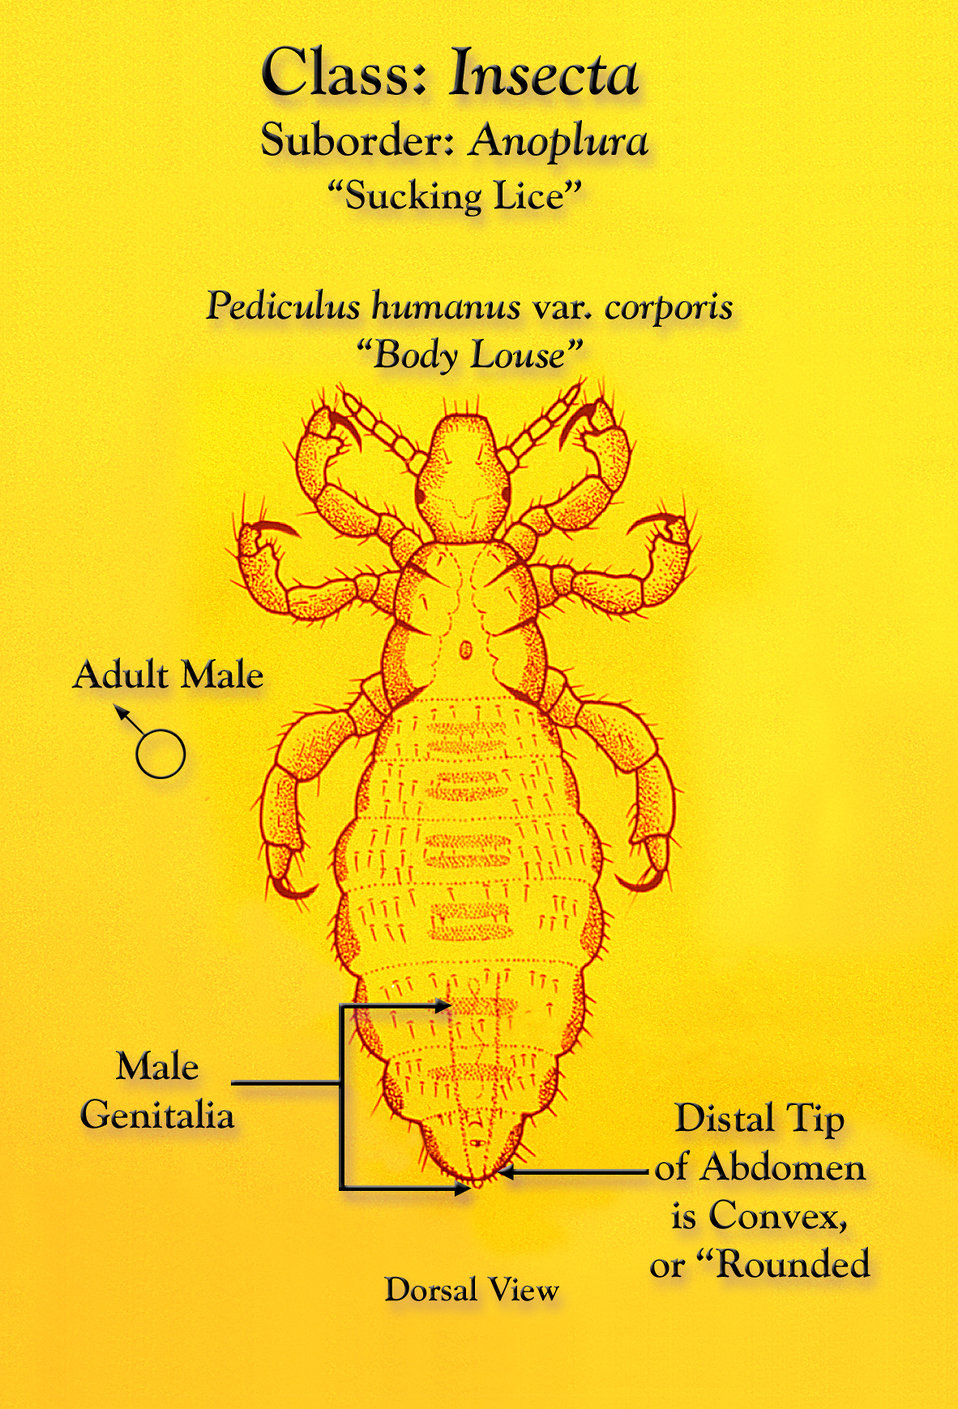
This illustration depicts a dorsal view of a male body louse, Pediculus humanus var. corporis.